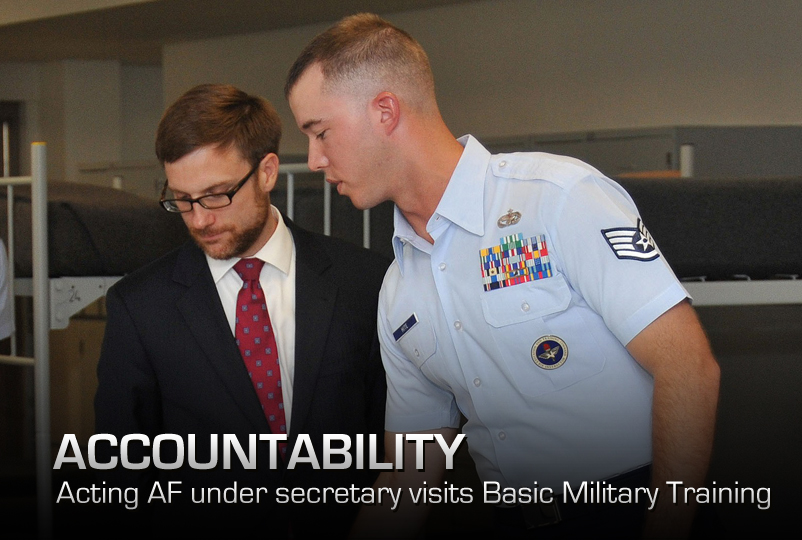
Acting under secretary of Air Force visits BMT